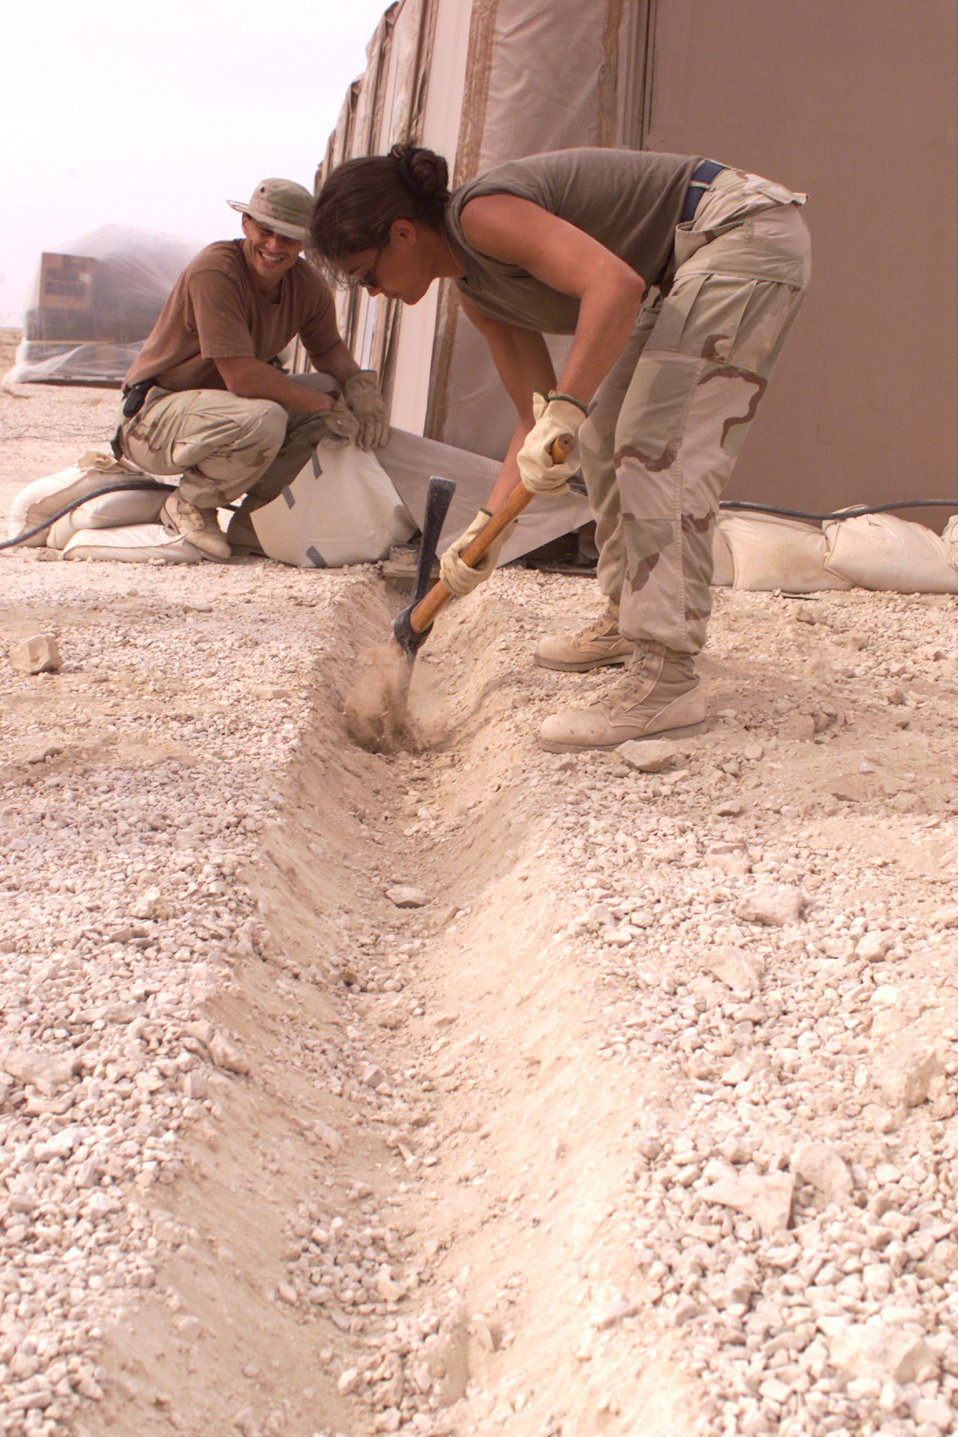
Trench

OPERATION ENDURING FREEDON -- Staff Sgt. Cynthia Chagnon, an engineering and installation technician from the 366th Air Expeditionary Group, digs a conduit trench as Master Sgt. Kris Lewis looks on at an Operation Enduring Freedom location Dec. 17.